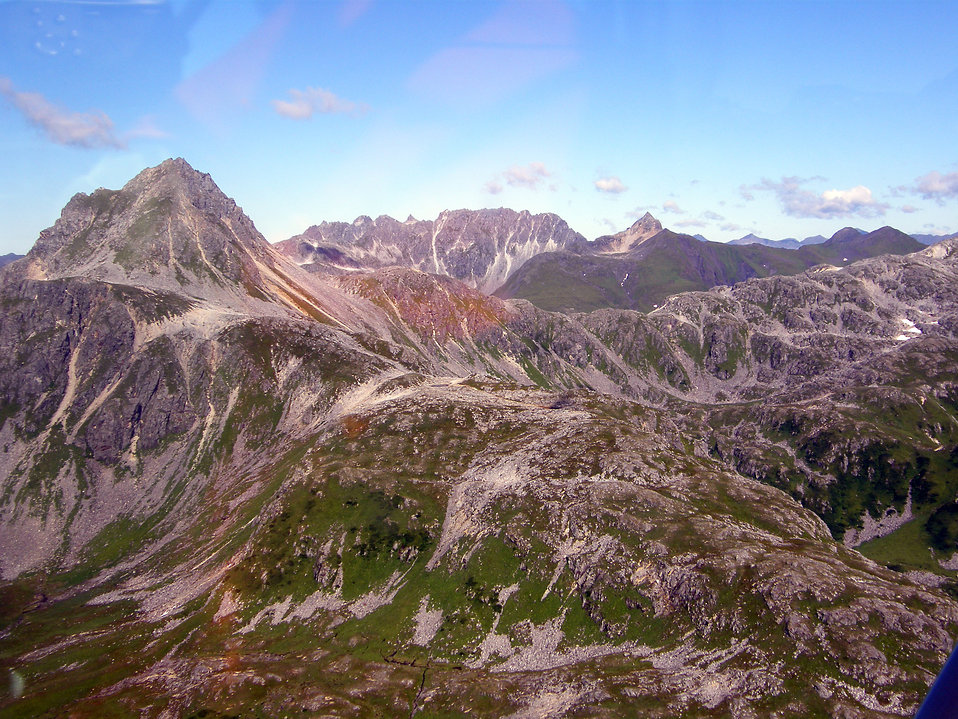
Kodiak High Country

Photo Credit: G Wheeler/USFWS

High Alpine on Kodiak Island.

Contact: Lisa Hupp@fws.gov

Source: Kodiak NWR